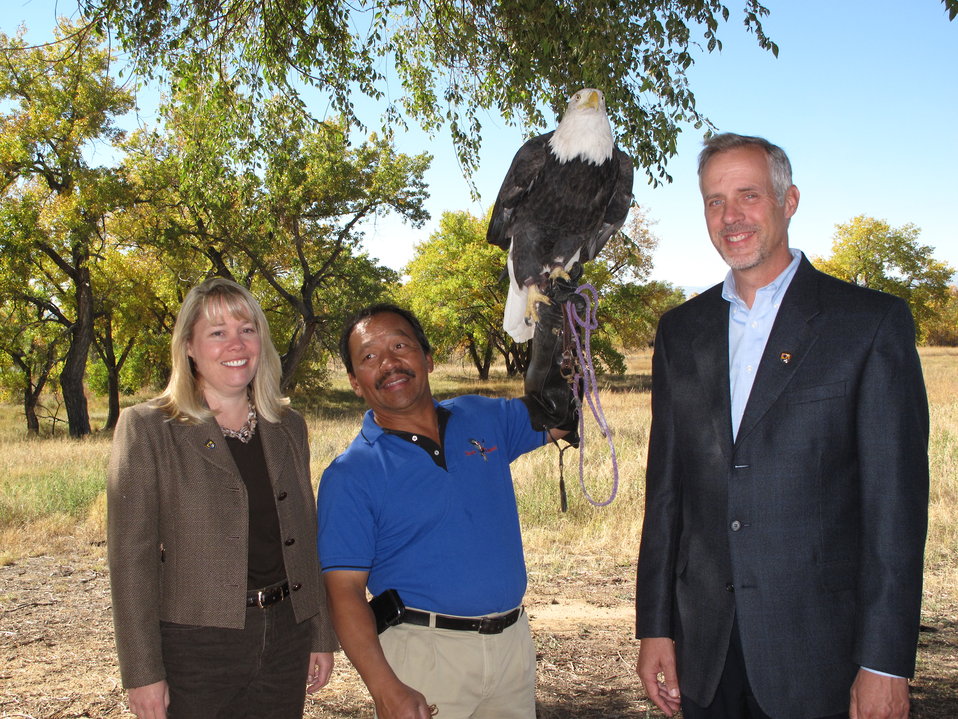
Region 6 Leaders

Region 6 Deputy Director Noreen Walsh and Region 6 Director Steve Guertin with Hawkquest and a bald eagle.